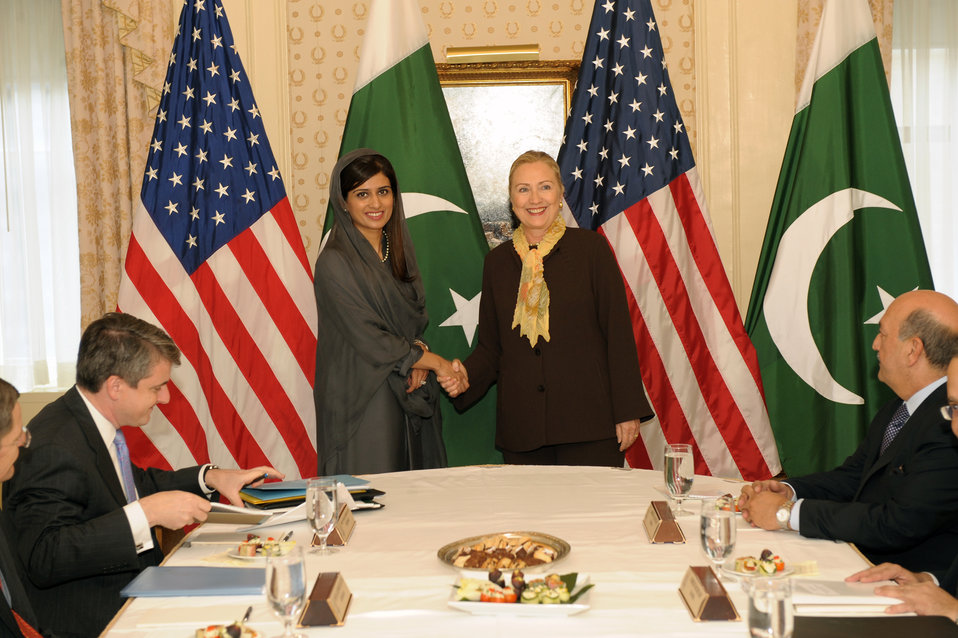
Secretary Clinton Meets With Pakistani Foreign Minister Hina Rabbani Khar

U.S. Secretary of State Hillary Rodham Clinton meets with Pakistani Foreign Minister Hina Rabbani Khar in New York, New York, on September 18, 2011.